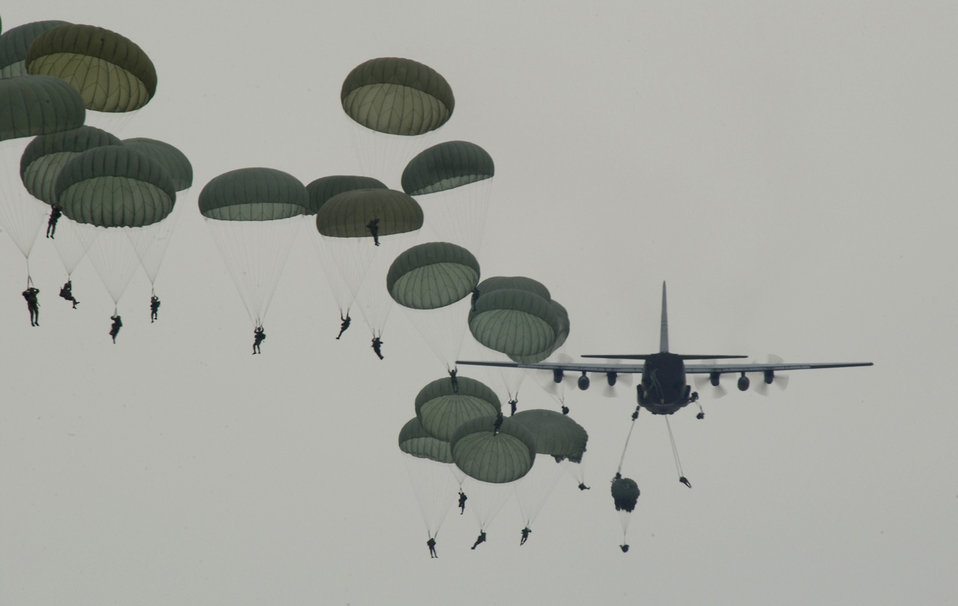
Making the drop

FORT BRAGG, N.C. -- A C-130 Hercules drops U.S. Army 82nd Airborne Division Soldiers over Normandy Range here May 10, during a joint forcible entry exercise (JFEX). JFEX is a joint airdrop exercise designed to enhance service cohesiveness between the U.S. Army and Air Force. It gives both services an opportunity to properly execute large scale heavy equipment and troop movement.